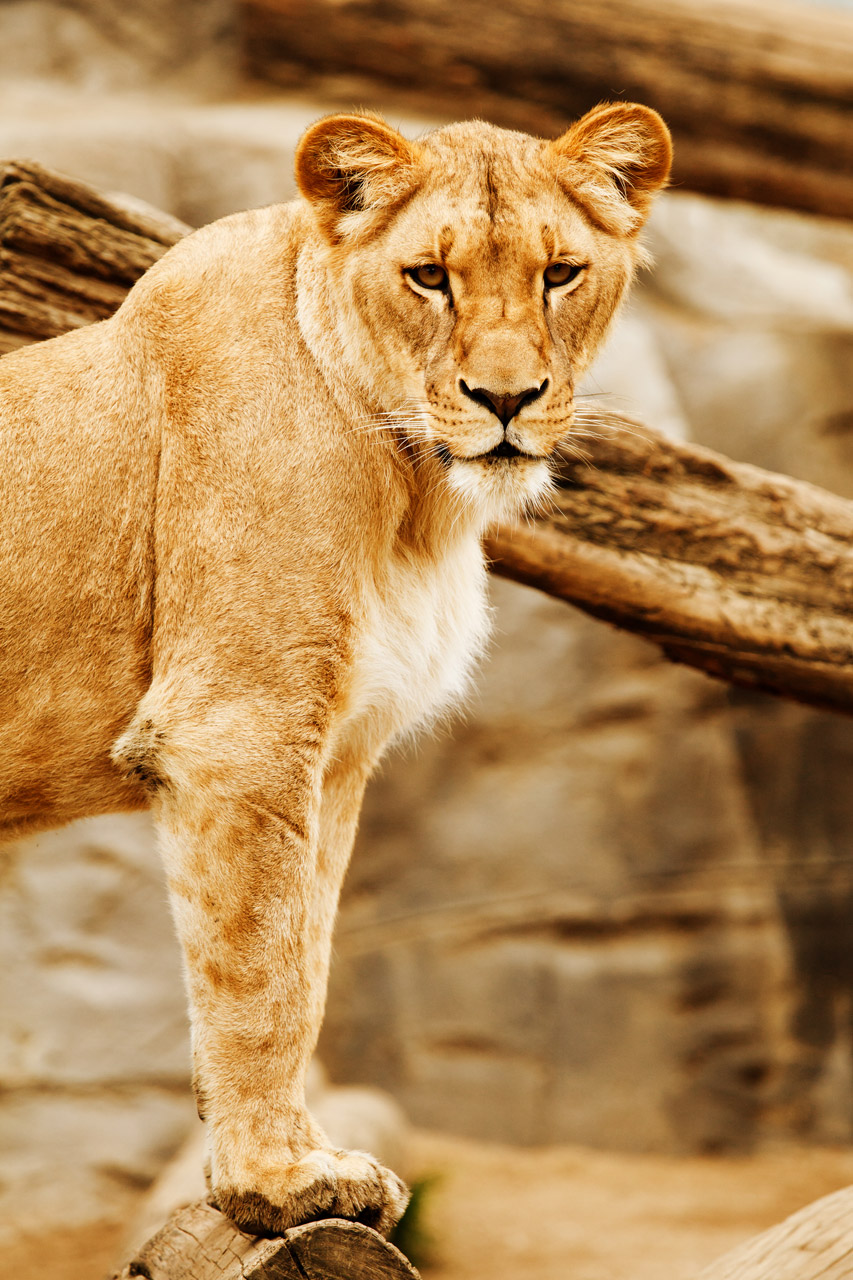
Lion's look

Lioness is looking at me.